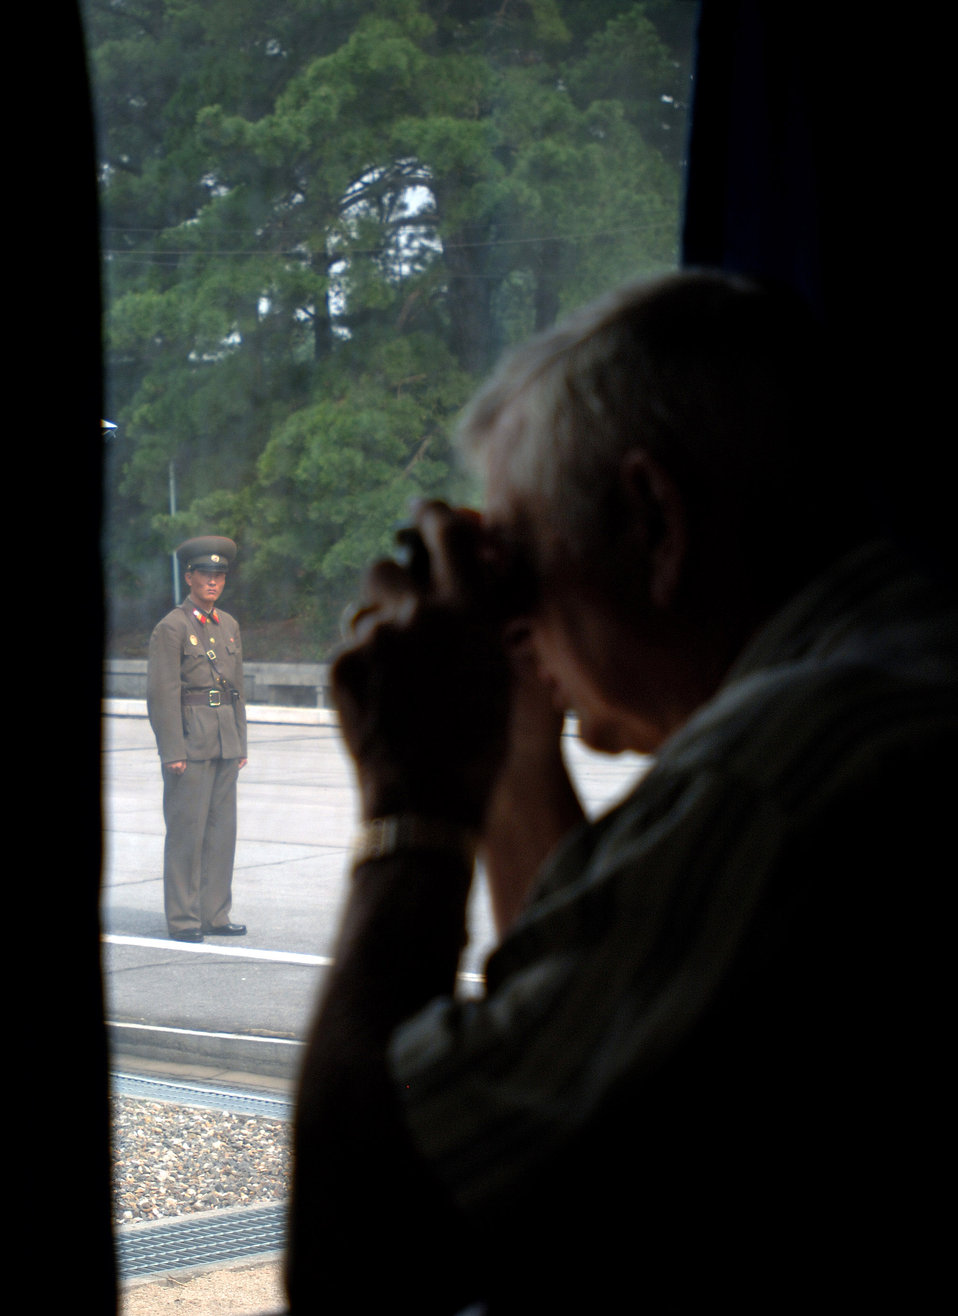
Korean War aces enlighten multitudes about their exploits

A Democratic People's Republic of Korea military policeman stares at retired Korean War veteran Col. Kenneth A. Shealy while he takes a photograph from inside the Korean Demilitarized Zone during a Sept. 13 tour held to honor Korean War veterans in Panmunjeom, South Korea. Air Force Korean War veterans were visiting South Korea during a weeklong tour in observance of the Air Force's 60th Anniversary.